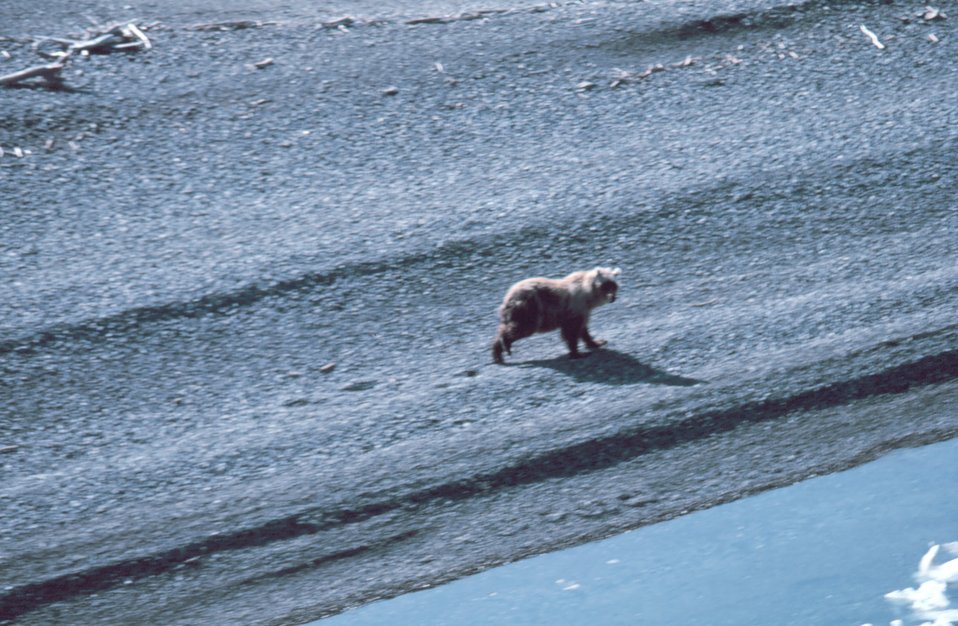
Brown bear - Ursus arctos - on the shore of the Beaufort Sea